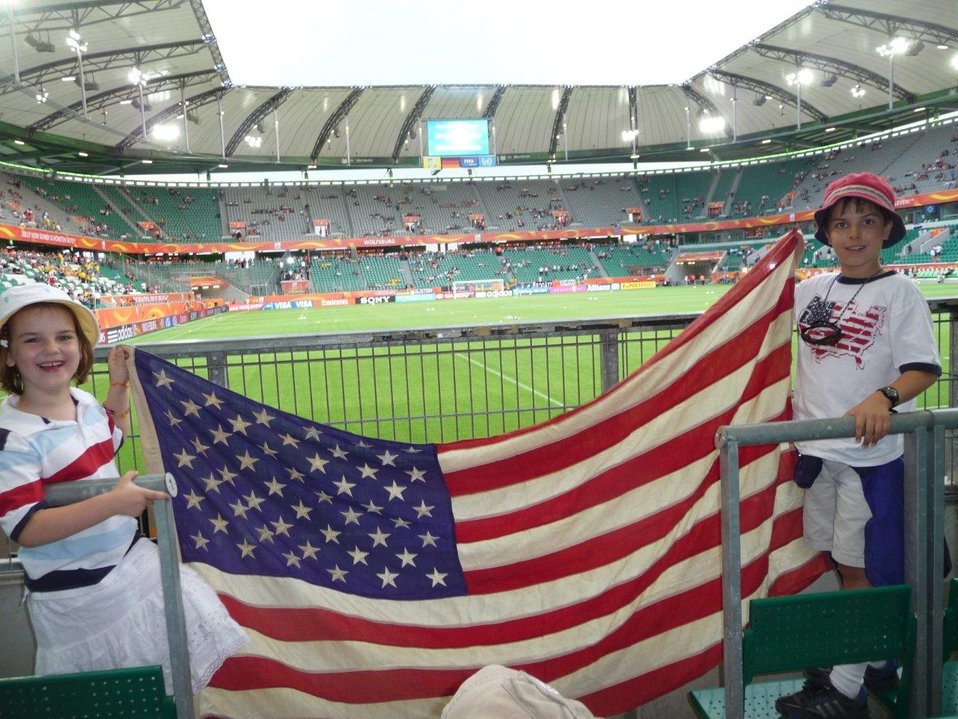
American youth hold an American flag before the beginning of the U.S.-Sweden soccer match at the 2011 FIFA Women's World Cup in Wolfsburg, Germany, on July 6, 2011.